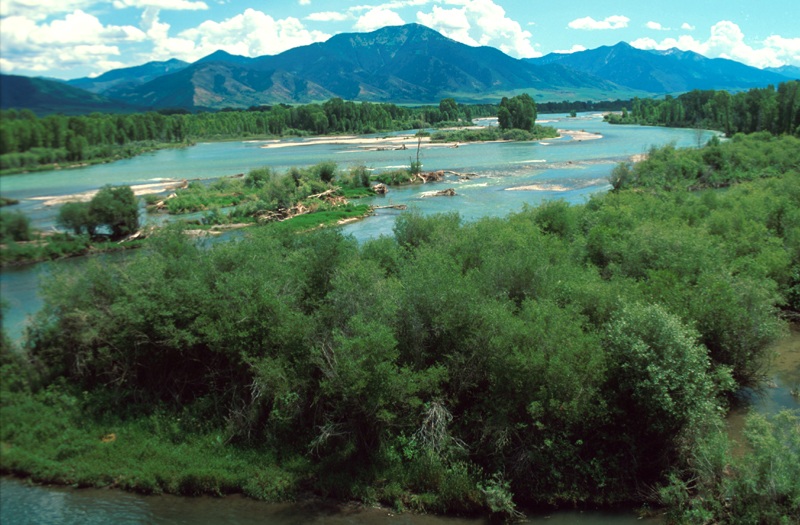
South Fork of the Snake River